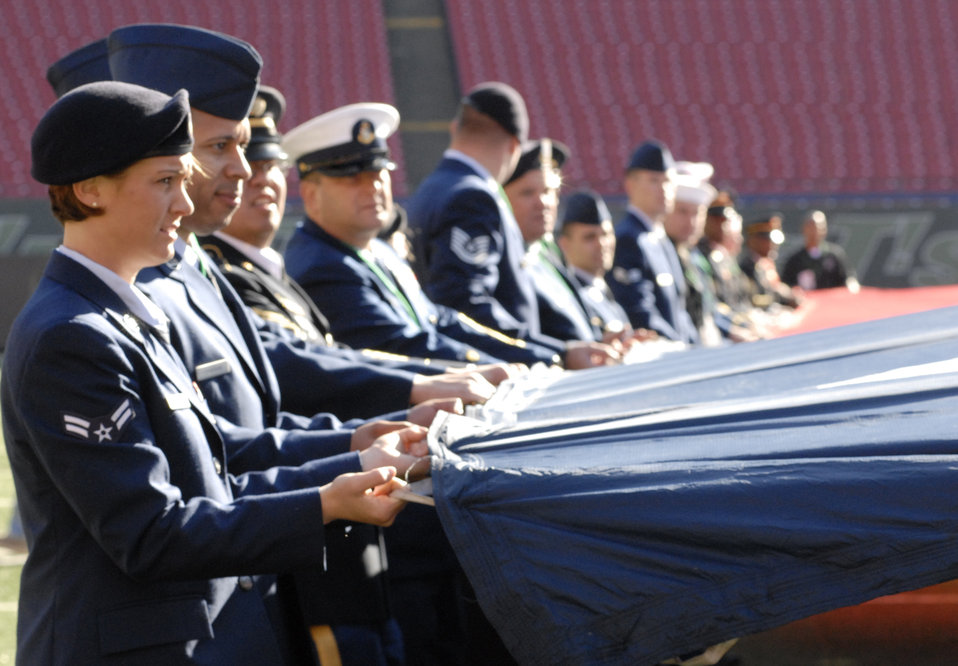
New York Jets Military Appreciation game

Airman 1st Class Amanda Bacinsky holds the end of an American flag during the pregame rehearsal for the New York Jets military appreciation football game at Meadowlands Stadium in New Jersey Nov. 9. Airman Bacinsky, along with 59 other servicemembers, unveiled the flag during the game's opening ceremony.